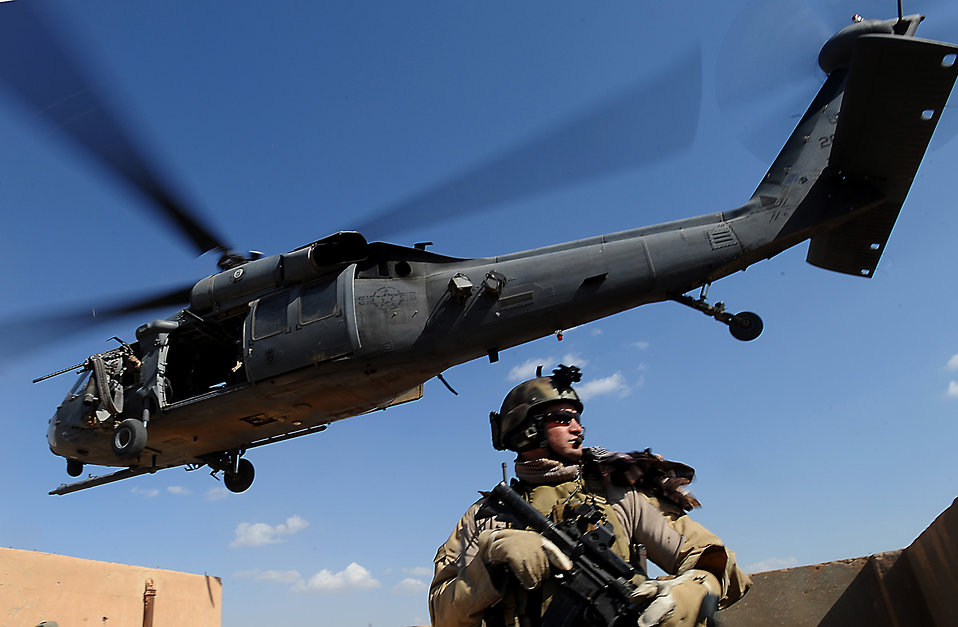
Balad squadron serves as Iraq's 'guardian angels'

Staff Sgt. Ivan Eggel, a pararescueman from the 64th Expeditionary Rescue Squadron at Joint Base Balad, Iraq, conducts security for an HH-60 Pave Hawk helicopter April 10 during proficiency training outside of Baghdad, Iraq.